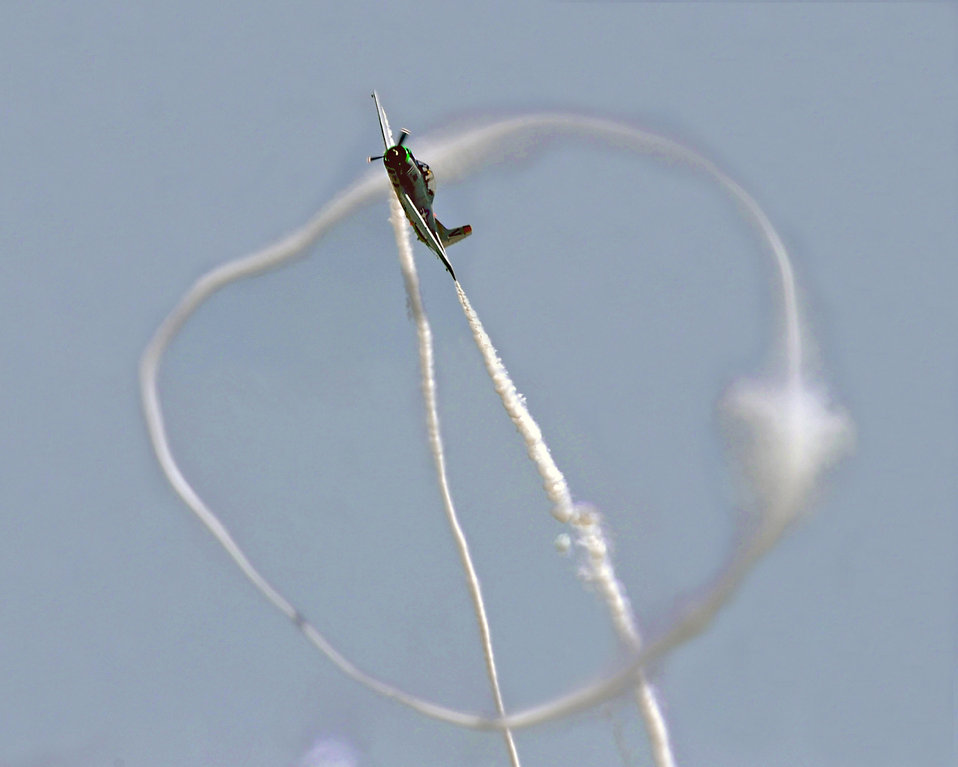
Will the circle be unbroken

Herb Baker flies his T-28C Warbird through a smoke ring April 25 during an air show at Langley Air Force Base, Va. The show was part of Airpower over Hampton Roads, a three-day event that was the closing highlight of Hampton Roads Air Force Week.